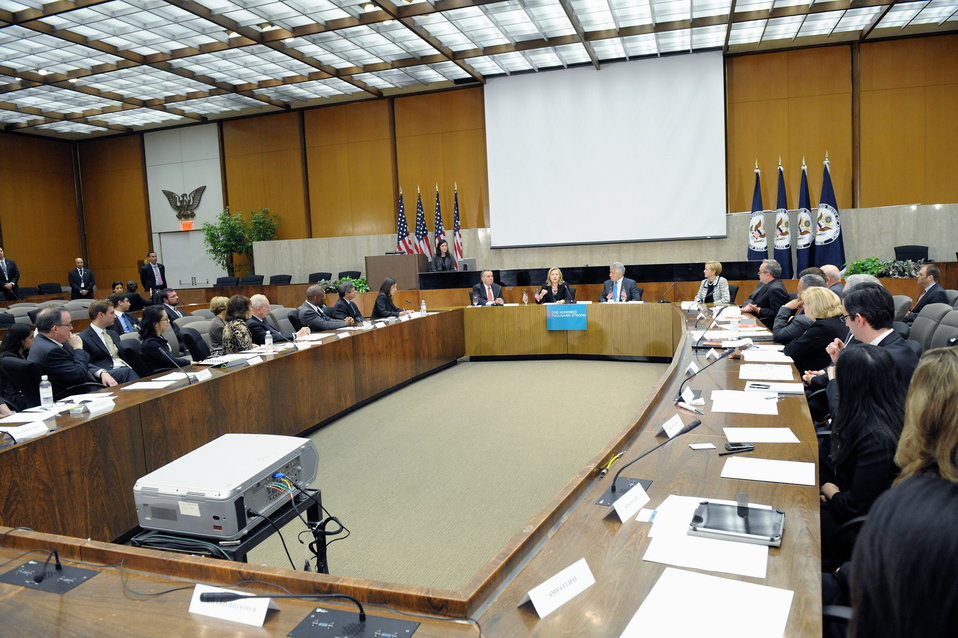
Secretary Clinton Participates in Inaugural Meeting of the Advisory Committee for the 100,000 Strong Initiative

U.S. Secretary of State Hillary Rodham Clinton participates in the Inaugural Meeting of the Advisory Committee for the 100,000 Strong Initiative in the Loy Henderson Auditorium at the U.S. Department of State in Washington, D.C., on May 10, 2011.